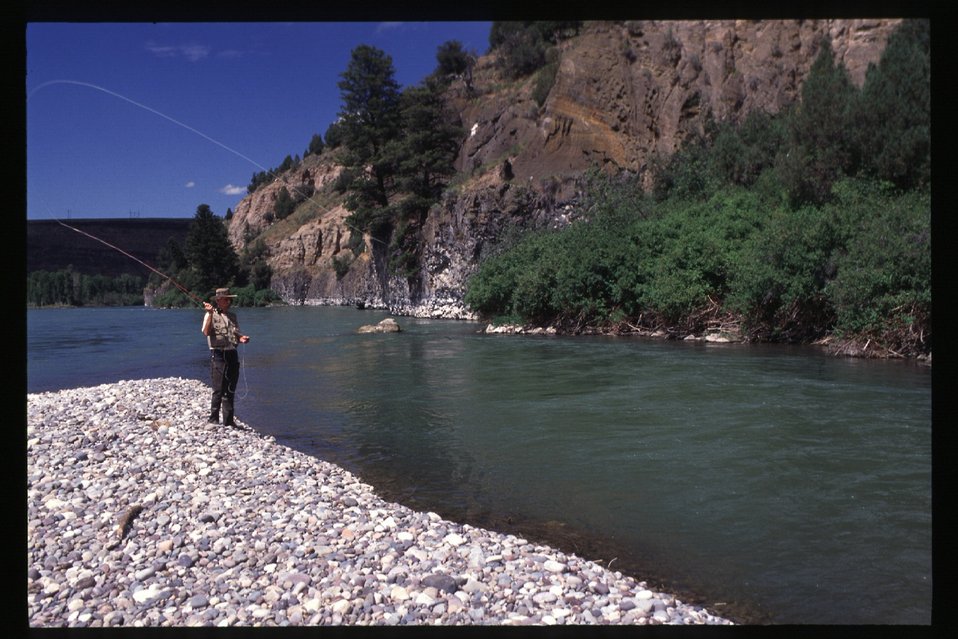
Fly fishing South Fork of Snake River Idaho Falls Field Office USRD Upper Snake River District